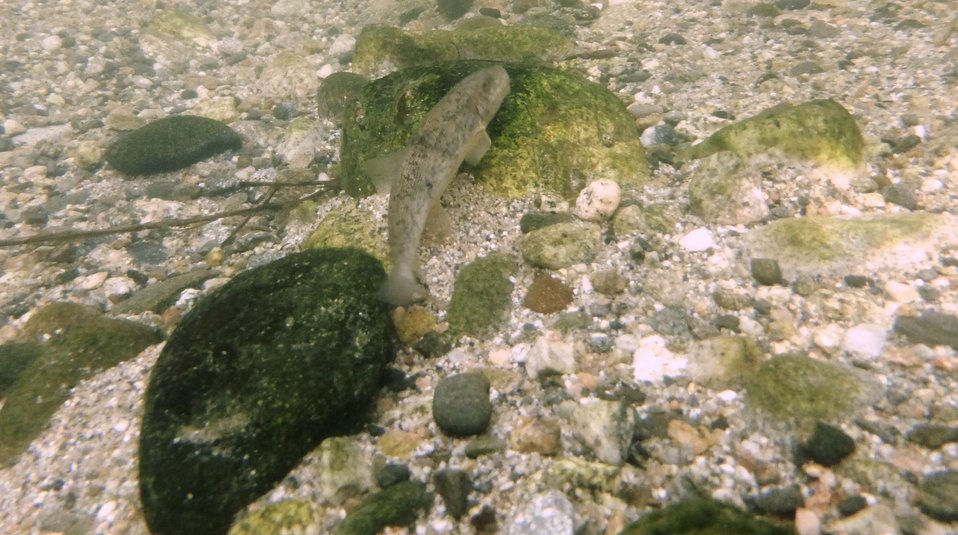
Santa Ana Sucker

This member of the sucker family feeds mostly on algae,
diatoms, and detritus scraped from rocks and other hard substrates.